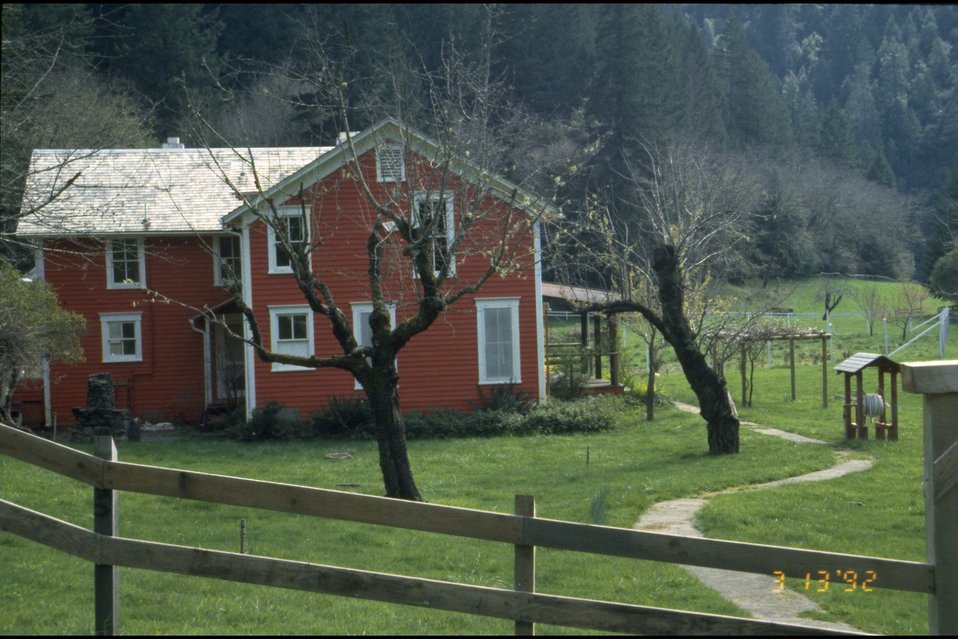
Rogue River Ranch - Main House, West side.